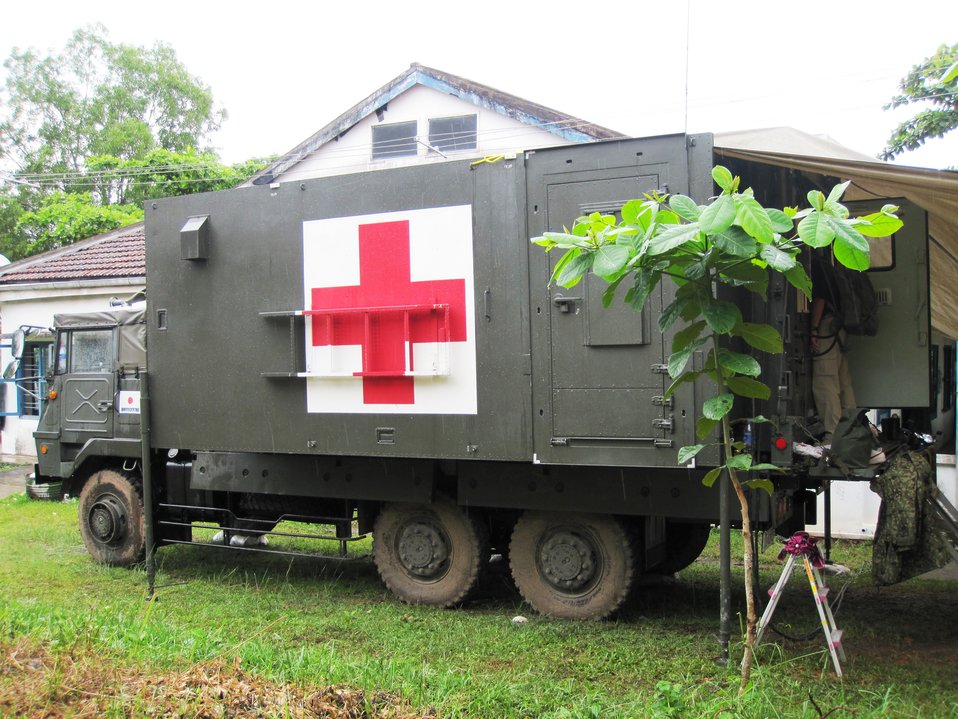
Japan Maritime Self Defense Force Rolling Clinic

The Japan Maritime Self Defense Force rolling clinic, deployed from the JDS KUNISAKI in support of Pacific Partnership 2010, assists Cambodians in Sihanoukville, Cambodia, on June 22, 2010.